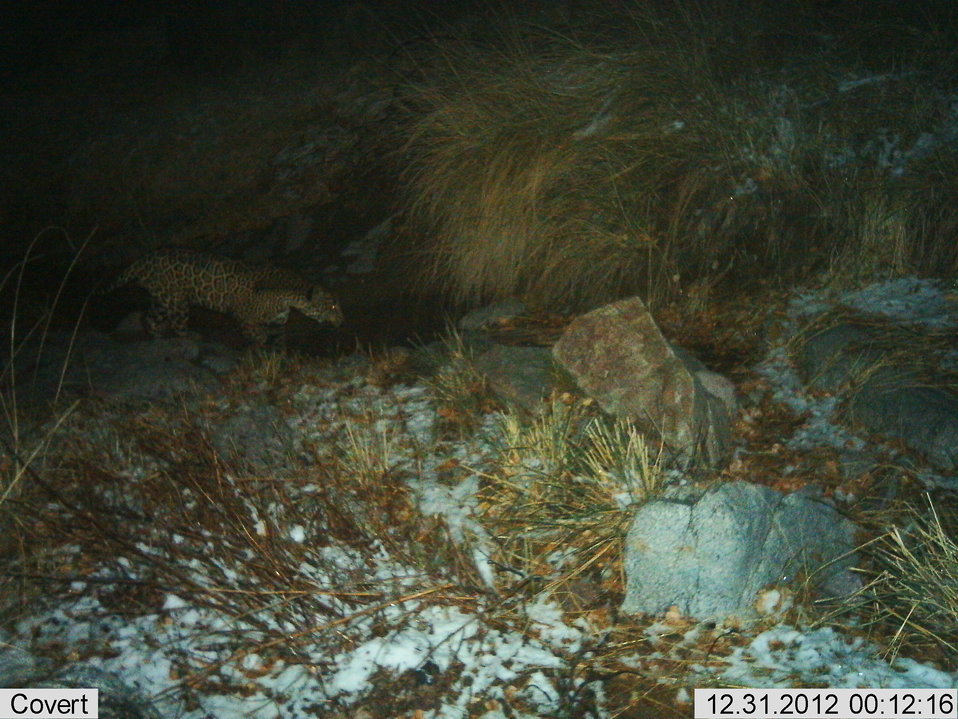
Male jaguar photographed by automatic wildlife cameras in the Santa Rita Mountains on December 31, 2012, as part of a U.S. Fish and Wildlife Service/Department of Homeland Security-funded
jaguar survey conducted by University of Arizona. One of three photos taken the same night in two different locations. (Same location UA Jaguar 2012-12-31(0.14am).)